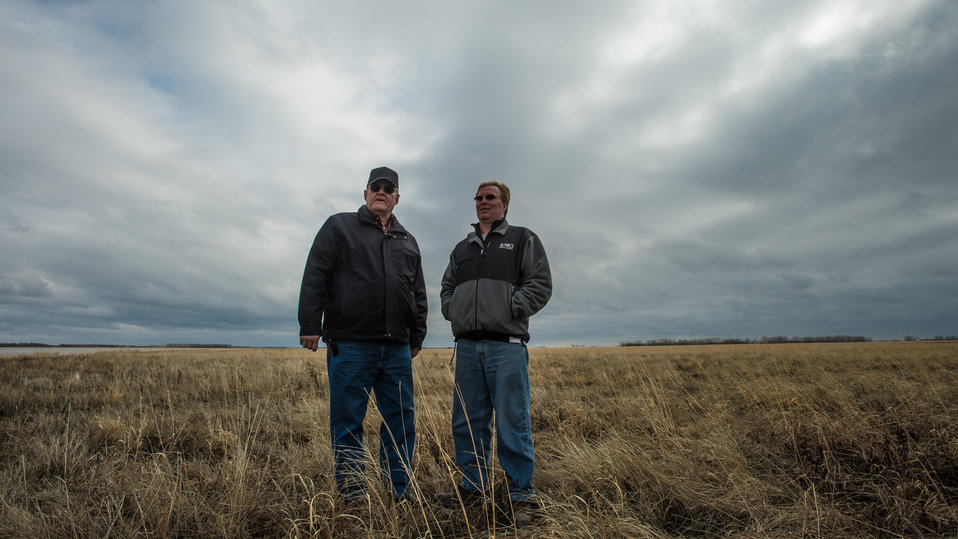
Farmland owner and U.S. Department of Agriculture (USDA) Emergency Watershed Protection (EWP) program –Flood Plain Easements (FPE) participant Neil Hanson, left, and Natural Resources Conservation Service District Conservationist Chris Nelson, standing on Hanson's flood plain easement, Wednesday May 1, 2013. To learn about the Red River Basin Initiative, see www.mn.nrcs.usda.gov/news/features13/RRBI.html.